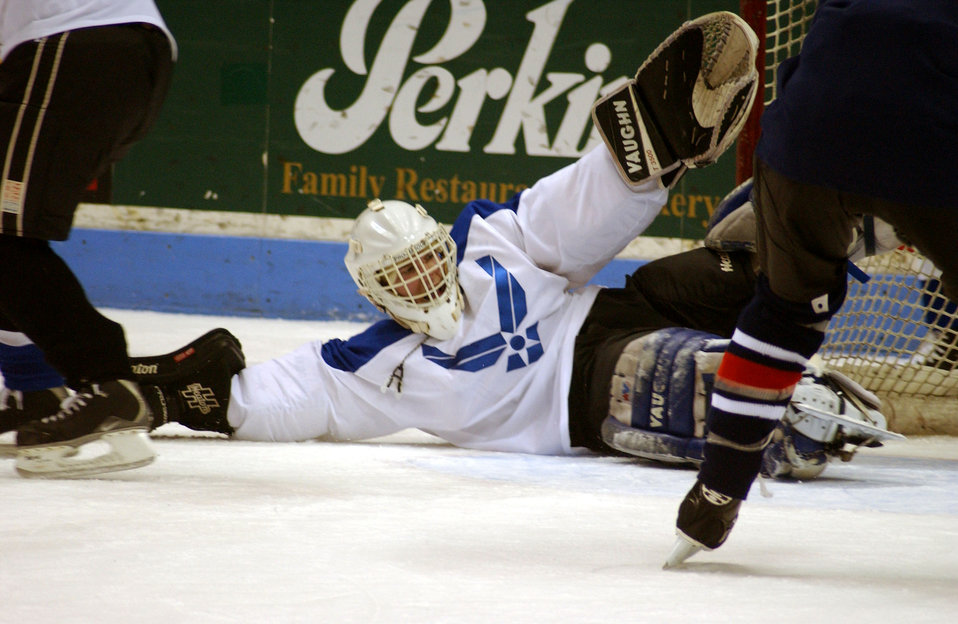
Air Force drops puck on Navy

CHARLESTON AIR FORCE BASE, S.C. (AFPN) -- Air Force goalie Jeramie Banks hits the ice for a save against a Navy skater in the third period of an exhibition hockey game held Feb. 8 at the North Charleston Coliseum. Banks shut down the Navy for the first two periods, allowing only one goal. The third period heated up, but the Air Force team held on to win the match 8-6. The game was part of the South Carolina Stingrays Military Appreciation Night honoring those serving their country. Charleston-based servicemembers made up the teams.